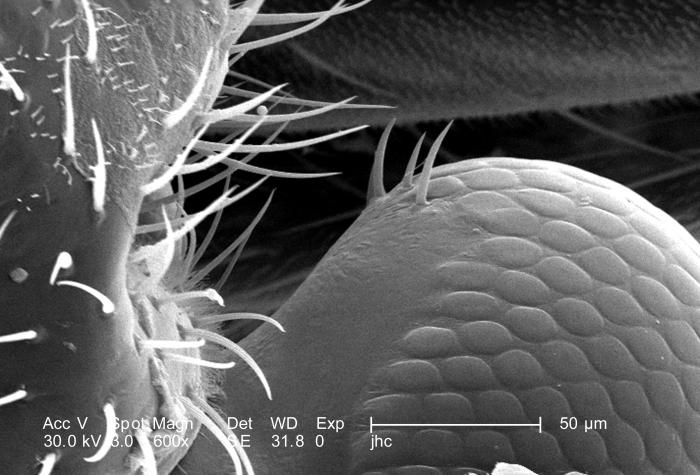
At twice the magnification, i.e., 600X, as that of PHIL 9904, this scanning electron micrograph (SEM) depicted one of the two compound eyes of an unidentified 1/4"-sized black flying insect with a small red mark on its dorsum, found in the Decatur, Georgia suburbs.The compound eye is given this name due to the fact that the single large eye is really made up of many repeating units known as "ommatidia', each composed of separate units made up of a photoreceptor cell, support cell, and pigment cells. Though each of these visual mechanisms functions as a separate organ, together they provide the organism with a "compound' picture of its environment. Due to what is referred to as the "flicker effect', the compound eye is made very sensitive to movement, with each ommatidium turning on and off, as objects pass across its field of view. The bilateral anatomical placement of the insect's eyes provides the organism with a very wide range of visual sensitivity.